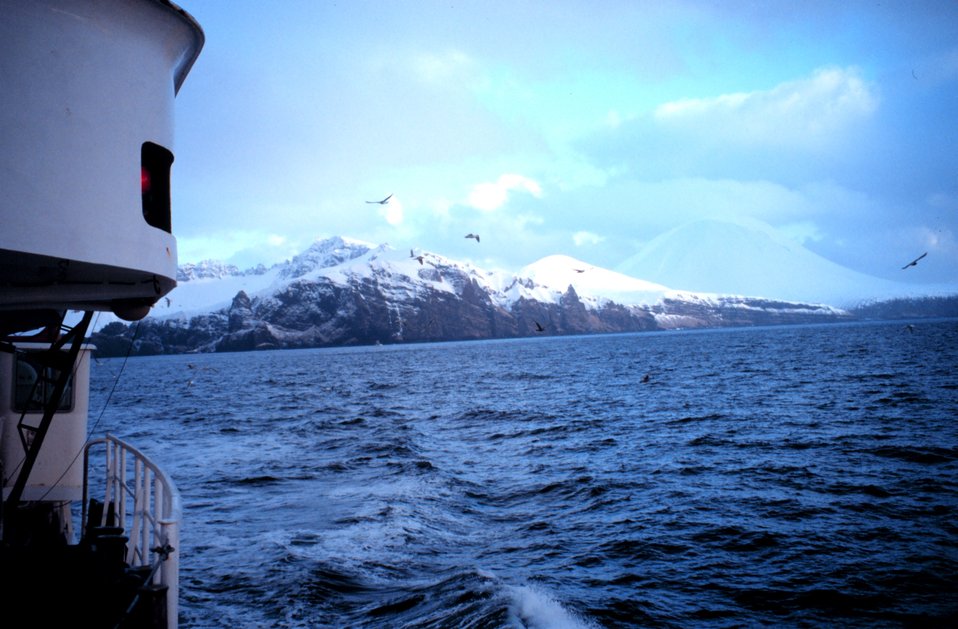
The ironbound shores of the Aleutians